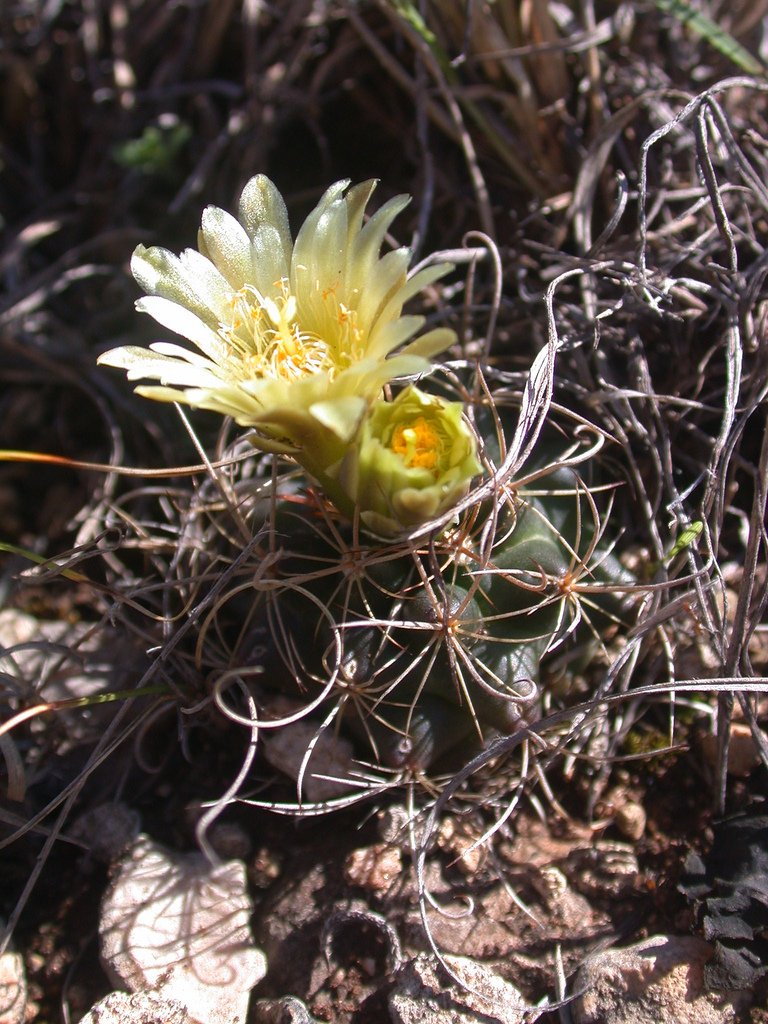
Endangered Tobusch fishhook cactus (Ancistrocactus tobuschii)